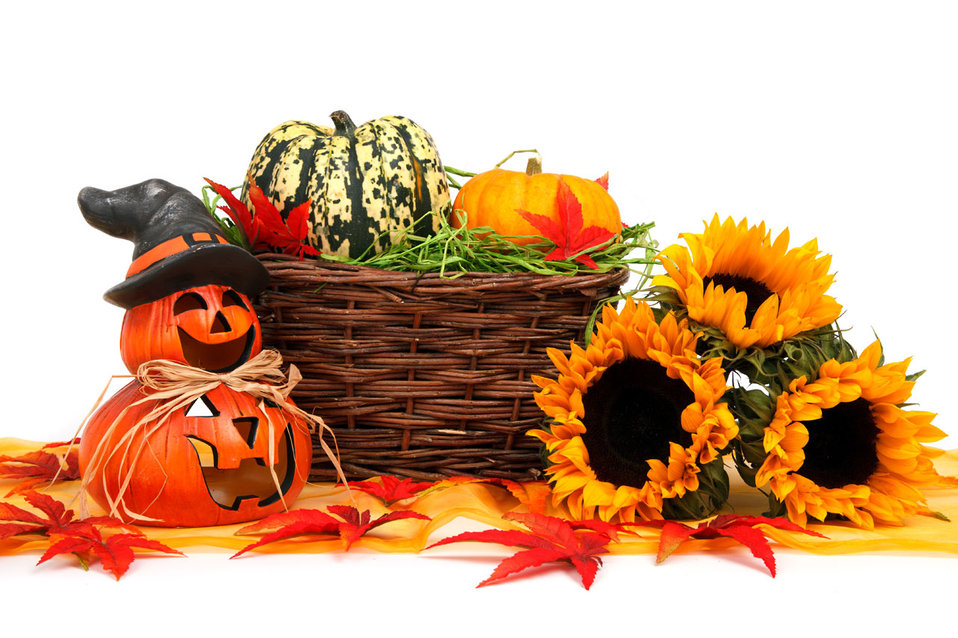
Halloween harvest decoration

Autumn halloween pumpkin harvest decoration with sunflowers on white background.